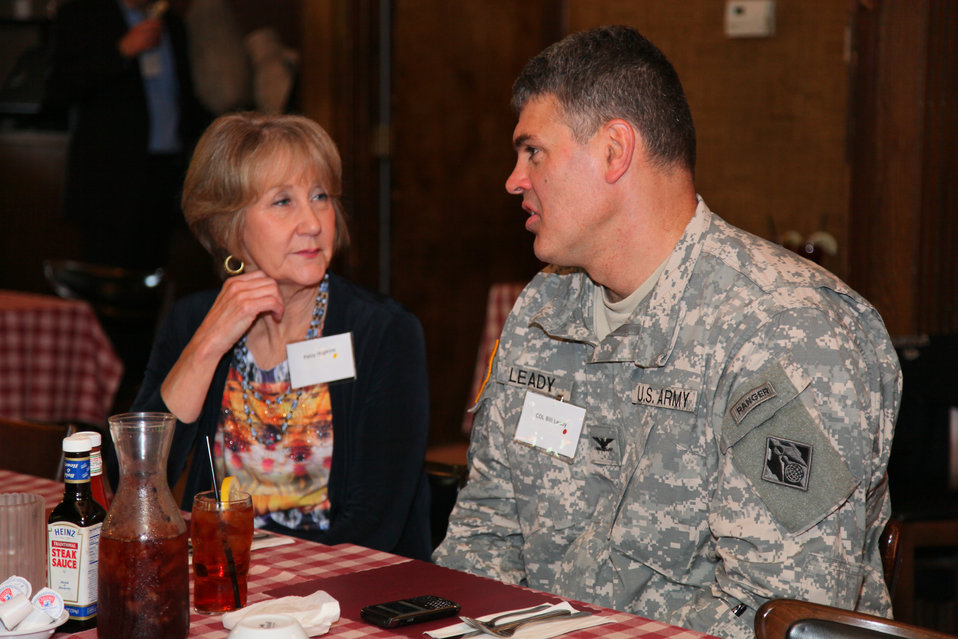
Retirees join Col. Leady at 30th annual luncheon

Col. Bill Leady, commander of the U.S. Army Corps of Engineers South Pacific Division, chats with Sacramento district retiree Patsy Hopkins at the 30th annual Sacramento district retiree luncheon at Club Pheasant in West Sacramento, Calif. May 26, 2011.

Leady acknowledged the retirees and thanked them for their service, noting that more than 30 retirees are currently still employed with the district as rehired annuitants.

“It is important that this generation stays connected with the younger generation of employees in our district,” he said, “passing down your technical expertise and your experiences.”